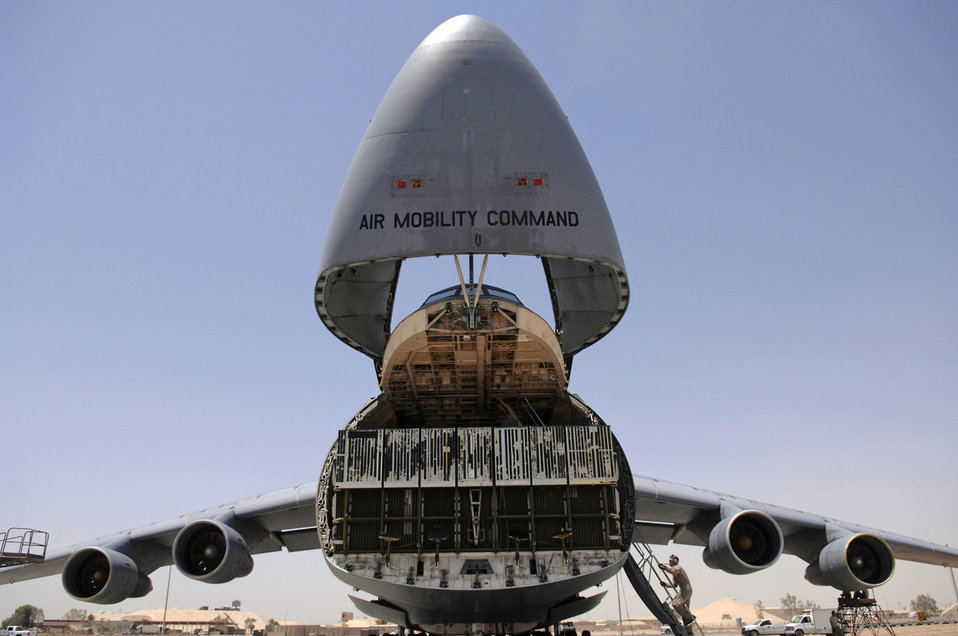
Open wide

A C-5 Galaxy sits with its nose up before loading an Army Stryker Infantry Carrier Vehicle June 25 at Joint Base Balad, Iraq. The final destination for the tactical vehicle is the Anniston Army Depot, Ala.